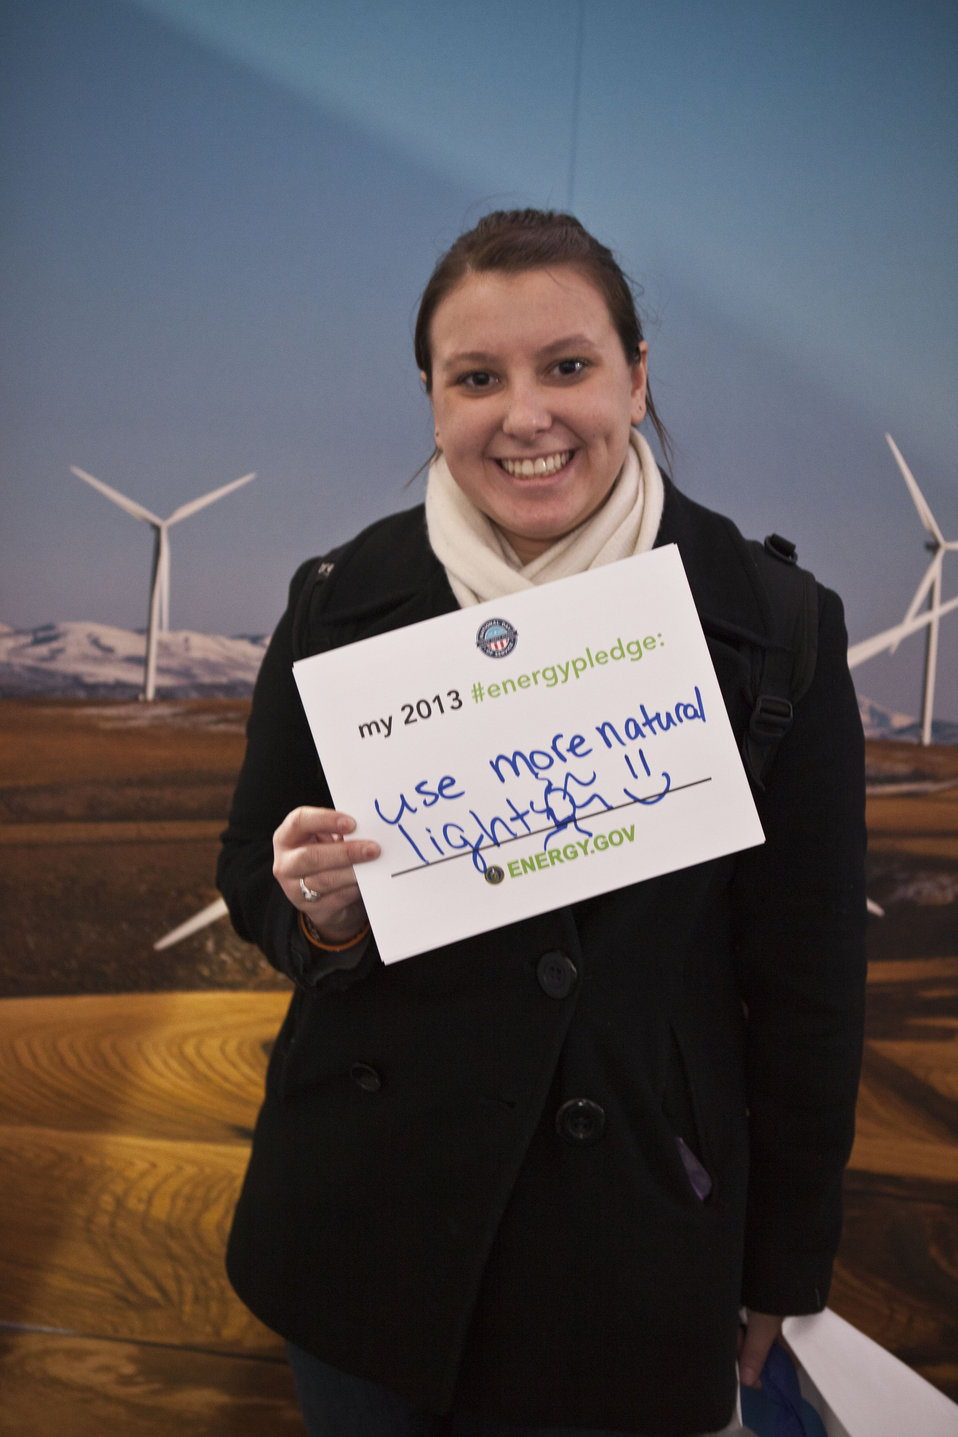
What's your #energypledge?